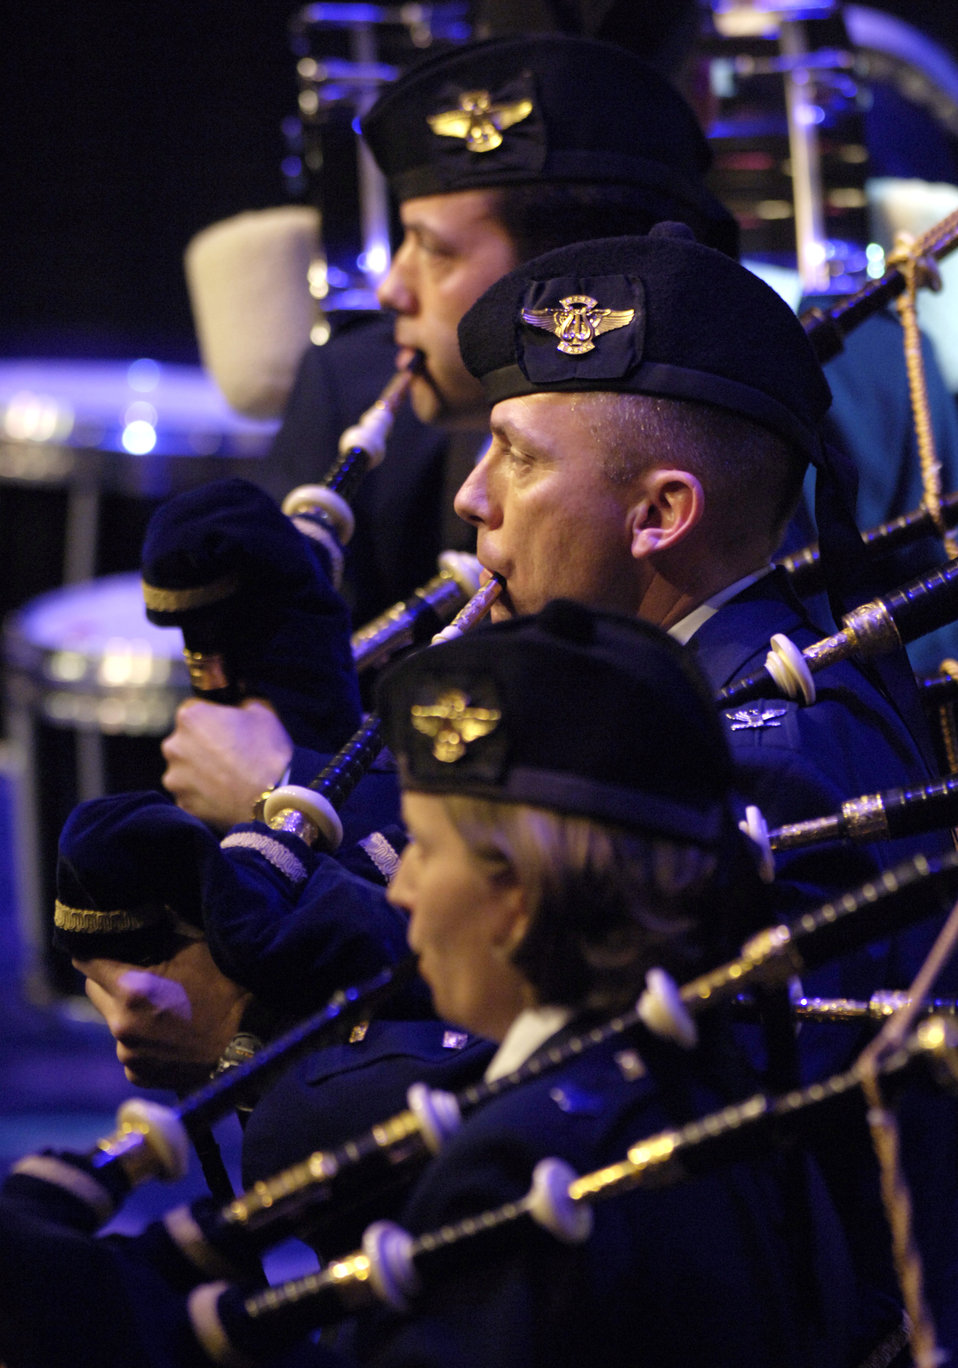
USAF Band guest artist series

Members of the Air Force Reserve Pipe Band from Robins Air Force Base, Ga., perform with the US Air Force Band capping off its 40th anniversary season of their guest artist series, Sunday, Mar. 5, 2006, in Washington, D.C. Also performing at the concert was country music star Mark Wills.